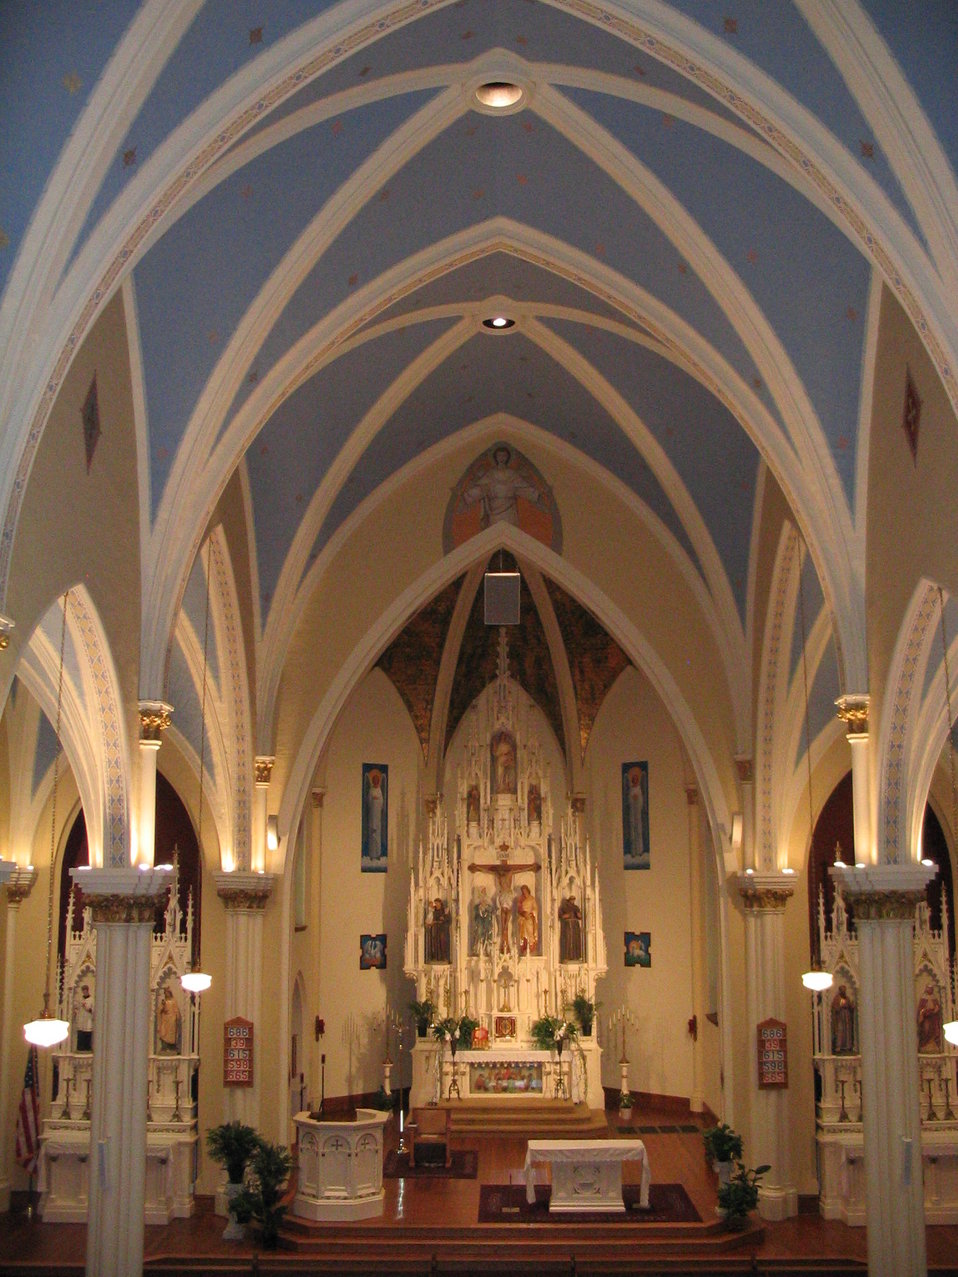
Photographed by Eric Crowell (self)